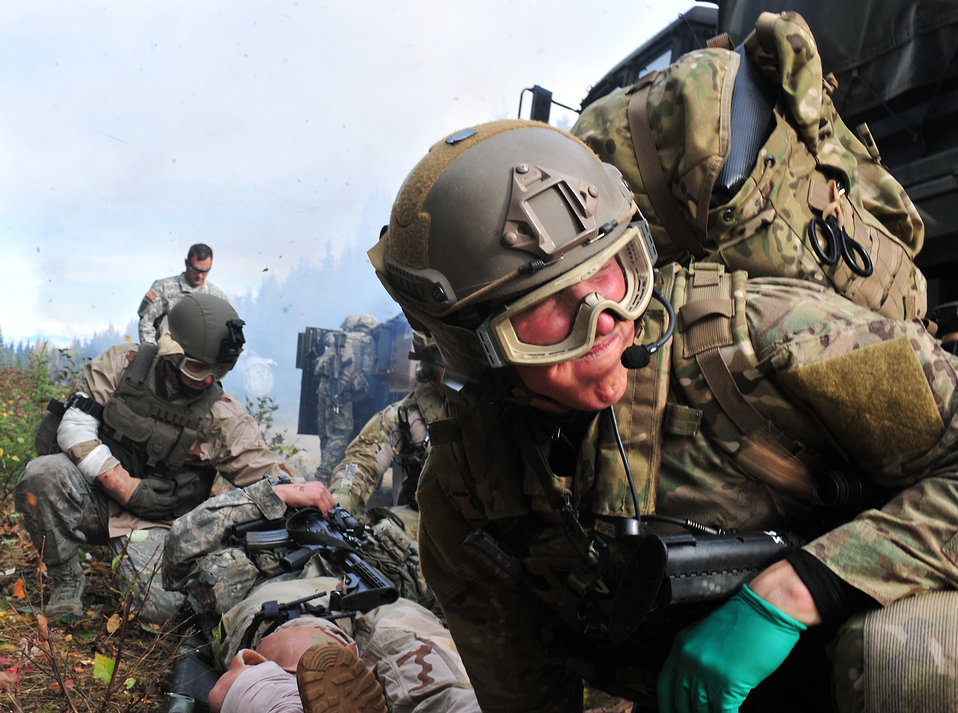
Man down

Staff Sgt. Bill Cenna prepares to move a patient on a litter while an HH-60G Pavehawk lands during training Sept. 21, 2011, at Joint Base Elmendorf-Richardson, Alaska. The training focused on quick-care under fire and also gave training to Baker Company, 3rd Platoon, 509th Infantry Regiment (Airborne) on how to react when pararescuemen arrive. Cena is a 212th Rescue Squadron pararescueman.